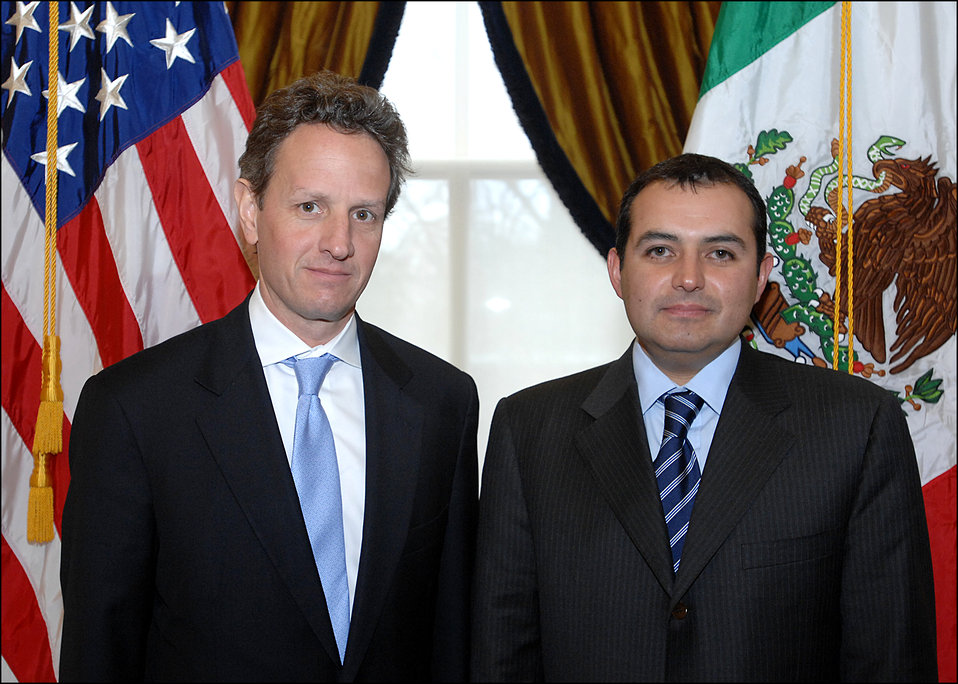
Mexican Secretary of Finance Ernesto Cordero

On January 20, 2010, Secretary Geithner met with Mexican Secretary of Finance Ernesto Cordero at Treasury.